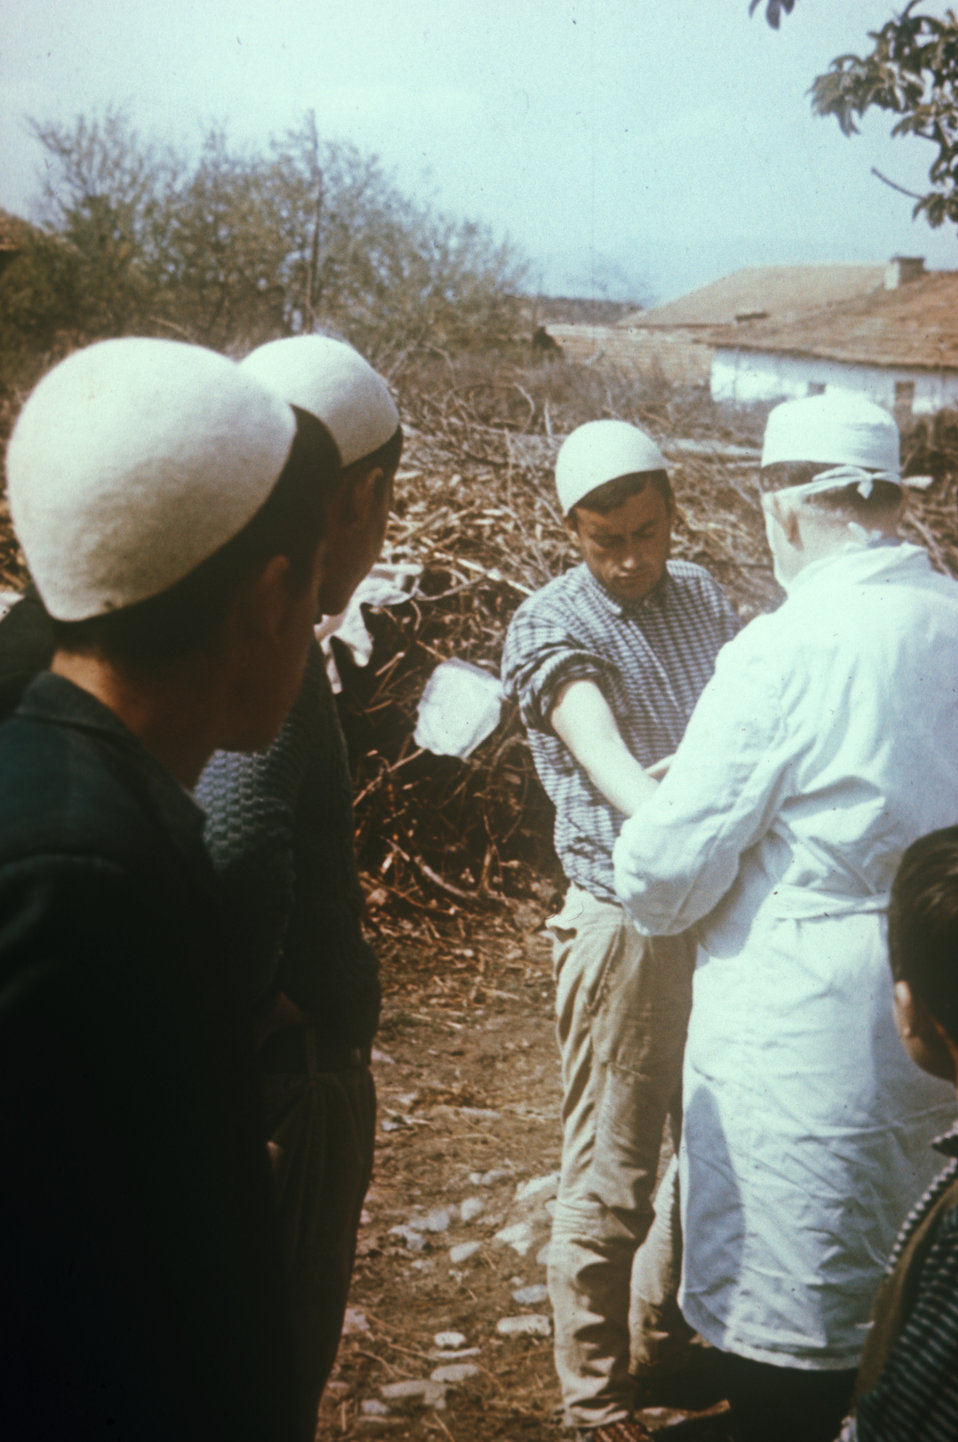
These field physicians are checking an immunization reaction in a man vaccinated during a smallpox epidemic in Yugoslavia, 1972.